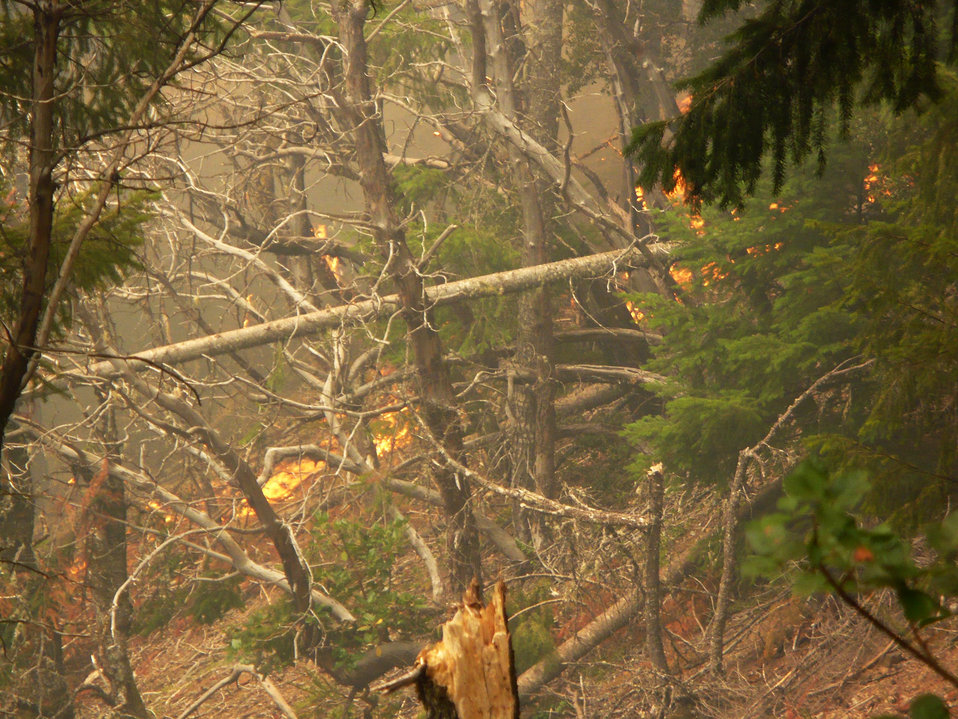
The Brimstone Fire near Merton, OR began on Jul. 26, 2013 began by lightning consumed 2,372 acres and is 100% contained.